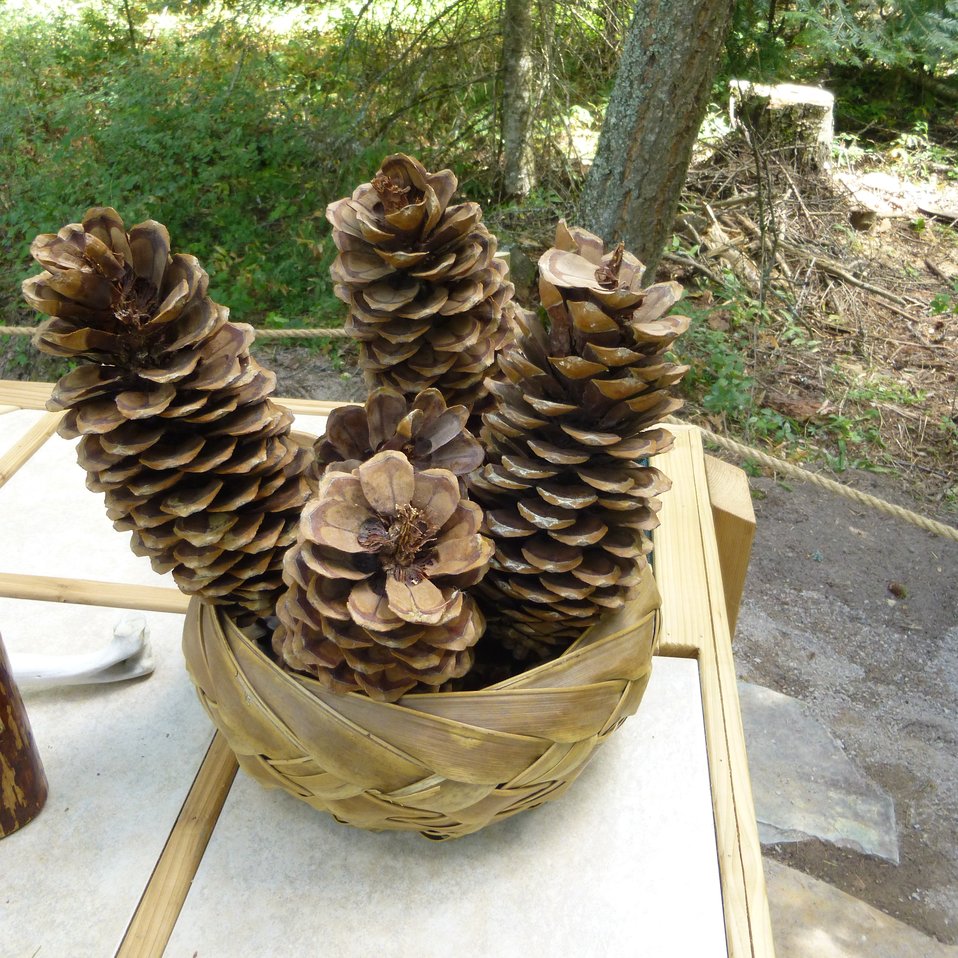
Creston's Nature Explore Outdoor Classroom

Pinecone arrangement in the Art Area at Creston NFH's Outdoor Classroom.